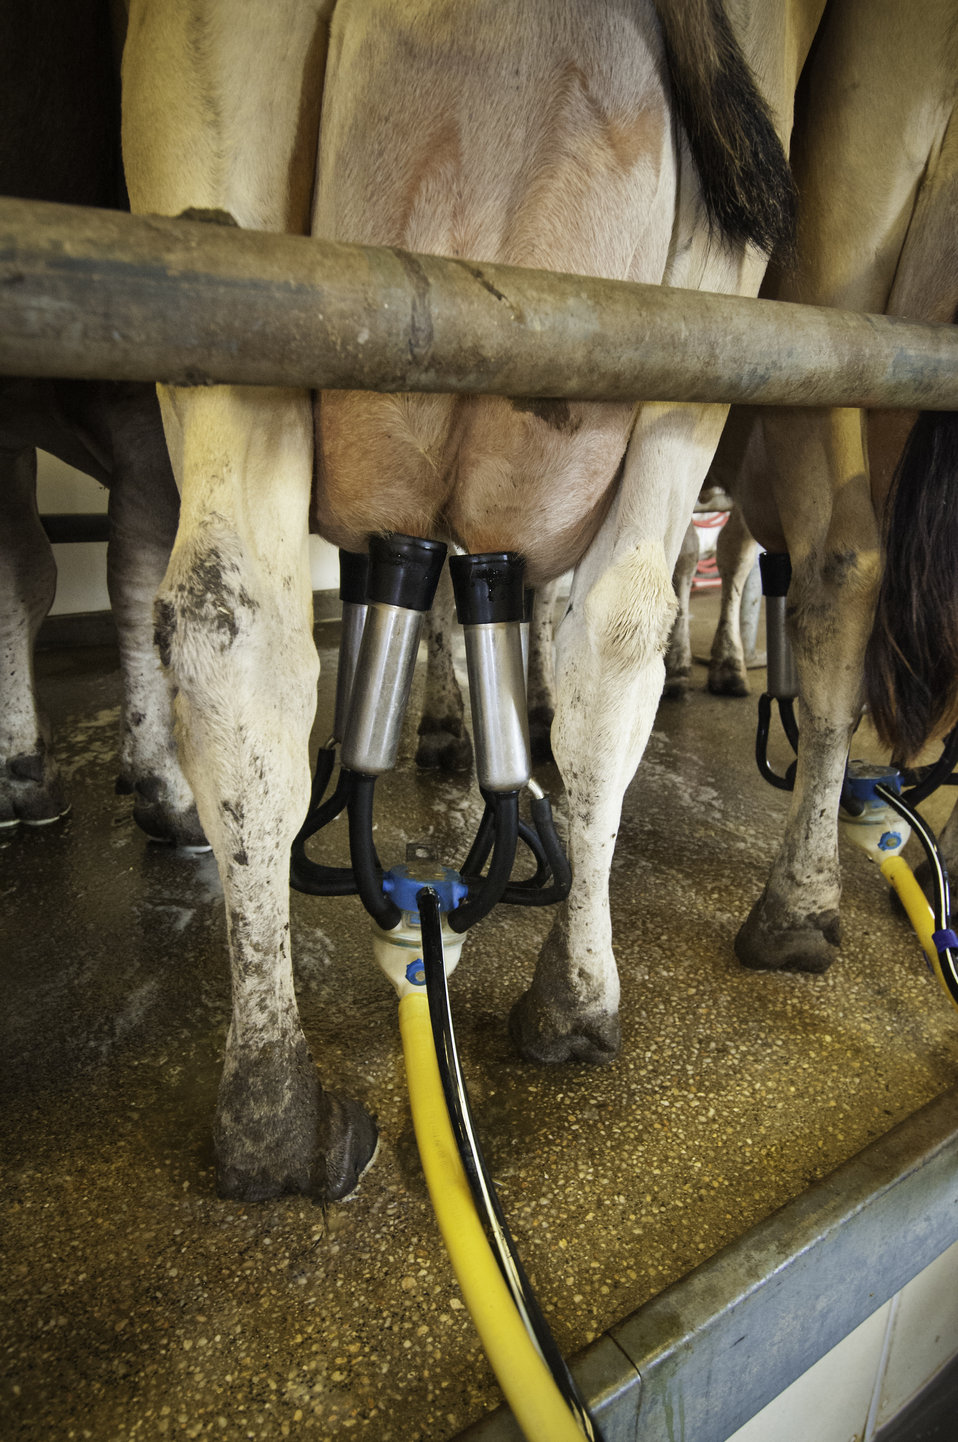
Chapel Country Creamery dairy produces artisan cheeses in Easton, MD starts with fresh raw milk produced on the family's Grade A dairy farm. The dairy herd consists of grass fed Jersey and Holstein cows that produce high quality milk, rich in cream. The milk is all-natural and contains no synthetic hormones, antibiotics, or chemical compounds. The diary produces its own cheese from start to finish, which insures the highest quality possible. They use only vegetable rennet and all natural ingredients in their cheese. The Jersey and Holstein cows graze on clover and rye grass on 45 acres of pasture. The cows are rotated among 32 different pastures to insure that the cows are eating the freshest and most nutritious part of the grass thus providing the highest quality of raw milk that is rich in cream. The dairy received the Talbot County, MD Soil Conservation Award for environmental friendly operations for soil, air and water quality concerns.